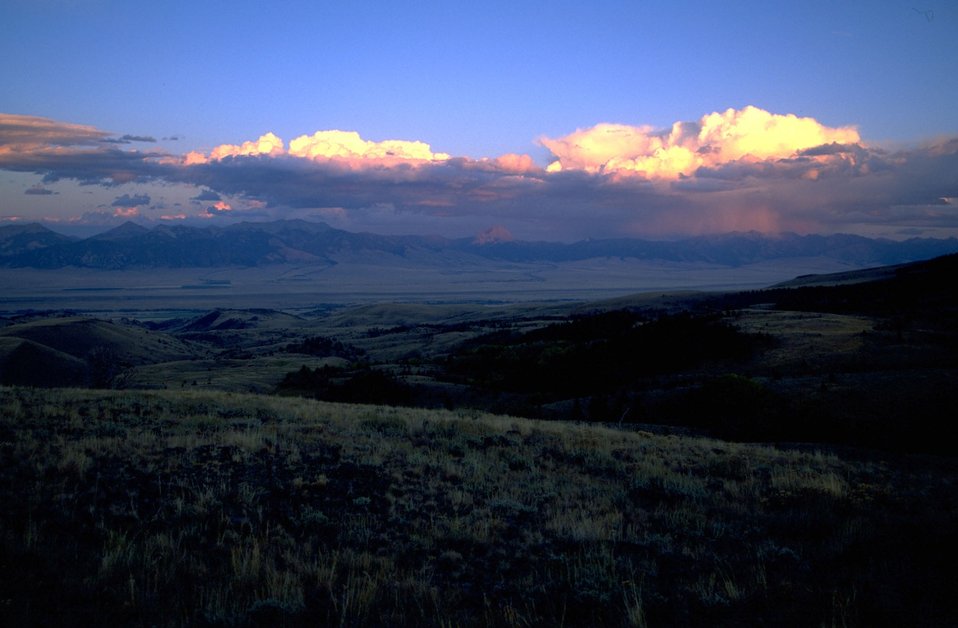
Reflection of the sun on clouds over a valley